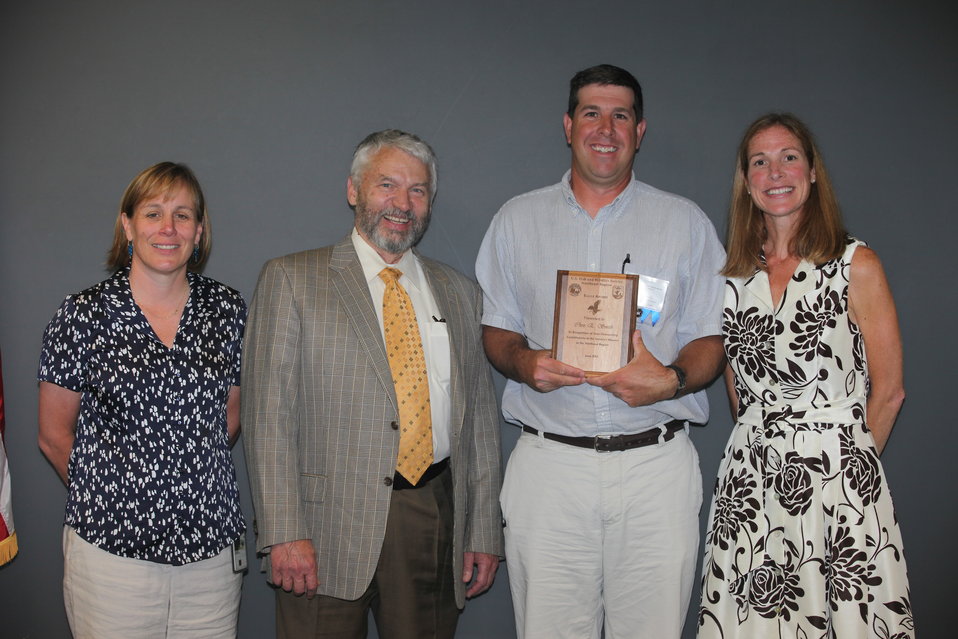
Chris Smith of the Lake Champlain Fish and Wildlife Resources Office recieved the Eagle Award.
From left to right: Deputy Regional Director Deb Rocque, Deputy Director Rowan Gould, Chris Smith, and Regional Director Wendi Weber